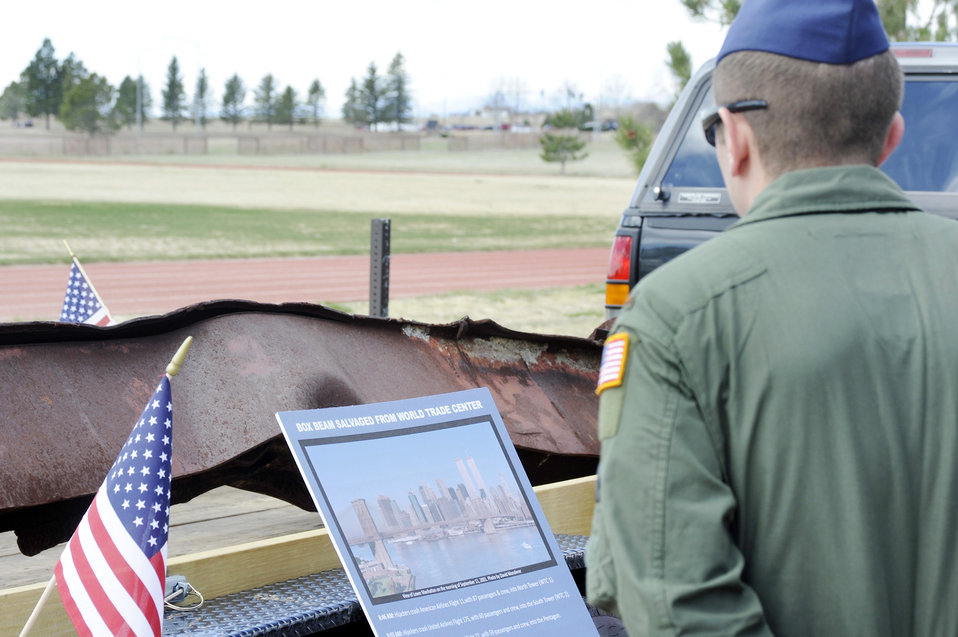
Future memorial for Schriever

An Airman from Schriever Air Force Base views a beam salvaged from of the World Trade Center April 26, 2010, at Schriever Air Force Base, Colo.